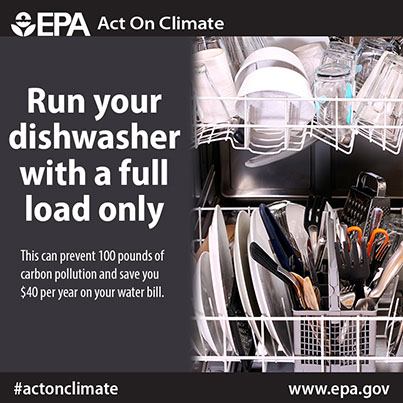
Run your dishwasher with a full load only to prevent 100 lbs of carbon pollution and save $40 annually on utility bills. #ActOnClimate www.epa.gov/earthday/actonclimate/